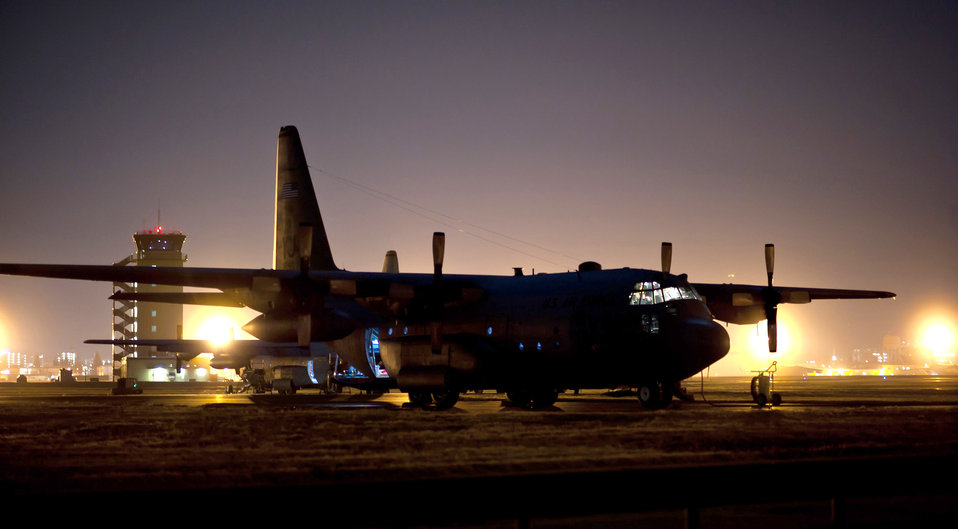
Maintainers keep C-130s flying to supply Operation Tomodachi

Maintainers from the 374th Aircraft Maintenance Squadron power up a C-130 Hercules for night-flying operations March 14, 2011, at Yokota Air Base, Japan. C-130s play a crucial role in disaster-relief operations because of their ability to land on dirt runways and other less-than-ideal landing conditions.